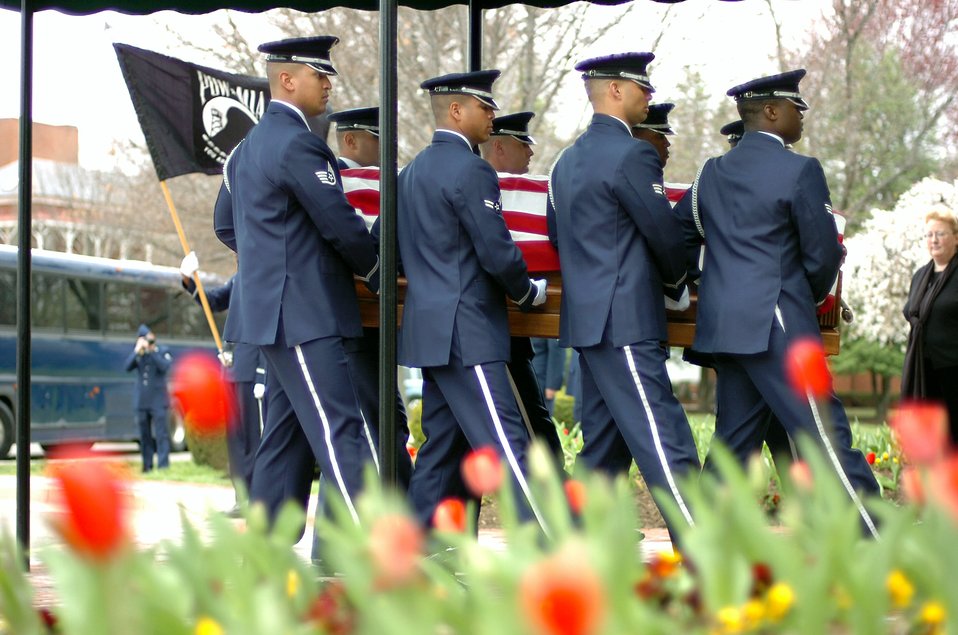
Colorado's last Guard Vietnam MIA laid to rest

Members of the Air Force Honor Guard carry the remains of Maj. Perry H. Jefferson into the Old Chapel April 3 at Fort Myer, Va. Major Jefferson had been listed as missing in action for 39 years in action in Vietnam. Major Jefferson was an intelligence officer with the Colorado Air National Guard's 120th Tactical Fighter Squadron and on April 3, 1969, he was flying aboard an O-1 Bird Dog observation aircraft that never returned to their base.